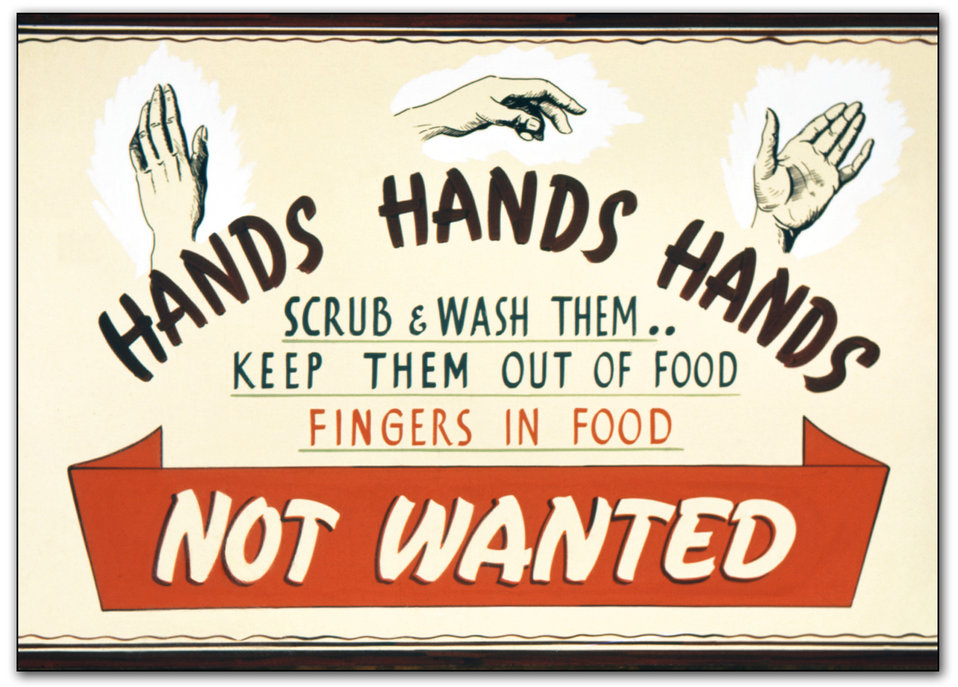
This historic sign was created by the Minnesota Department of Health in the 1930s admonishing food service workers to wash their hands frequently. It was part of a campaign to reduce food-borne illnesses.